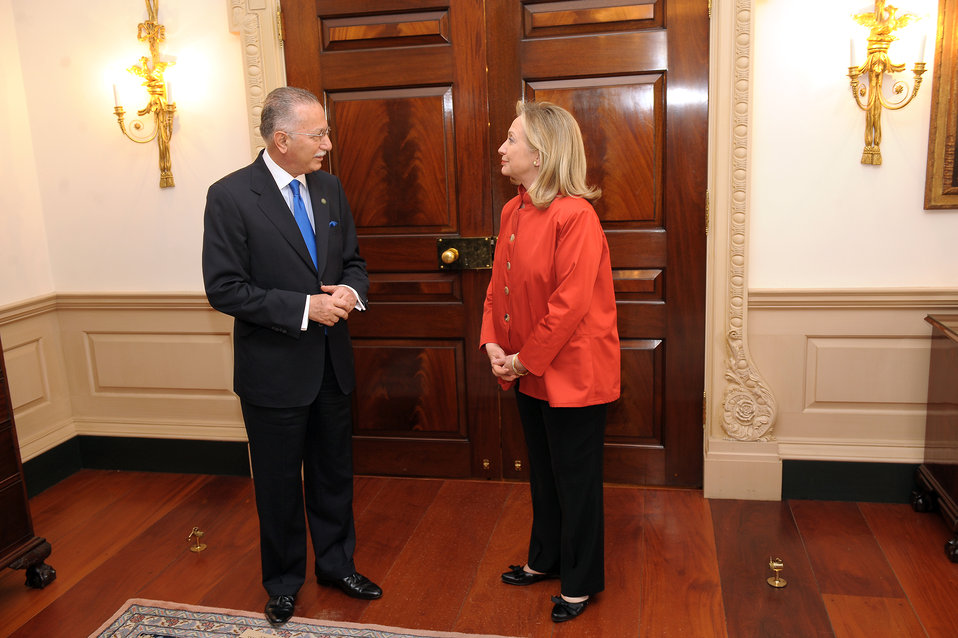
Secretary Clinton Meets With Secretary General Ihsanoglu of the Organization of Islamic Cooperation

U.S. Secretary of State Hillary Rodham Clinton meets with Secretary General Ekmeleddin Ihsanoglu of the Organization of Islamic Cooperation (OIC) at the Department of State in Washington, D.C. on March 15, 2012.